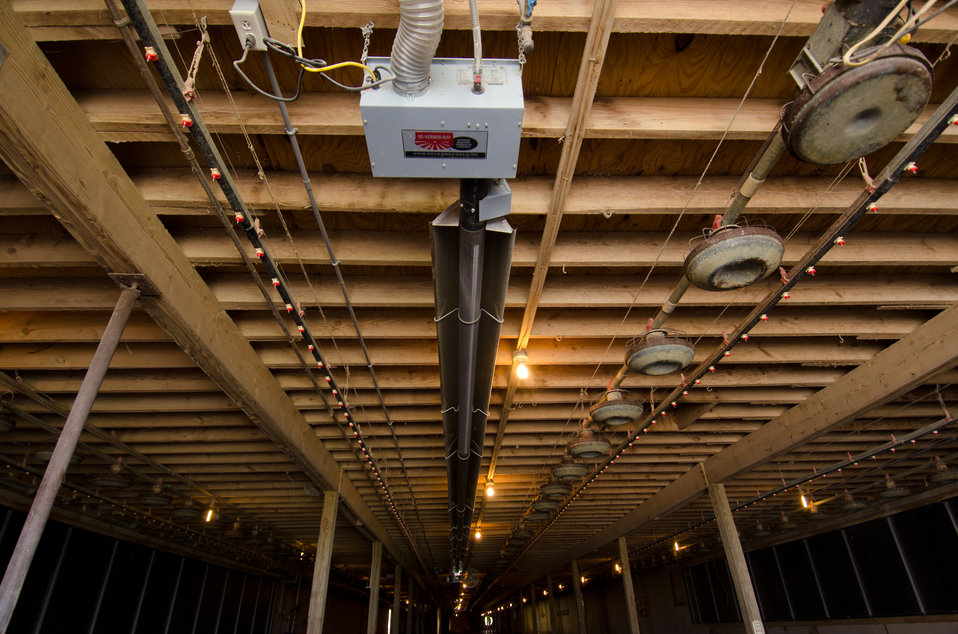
New radiant heaters (center) keep the chickens warm during Pennsylvania winters. Roxanne and Matthew Molnar have an 80,000 chicken farm in Grantville, PA, on, Thursday, April 21, 2011. The Molnar’s were recipients of a $20,000 Rural Energy for America Program (REAP) grant. The money is a portion of the cost to modernize the second of two 40,000 chicken capacity chicken houses Chickens need to be kept at a comfortable temperature to remain productive. New radiant heaters keep the chickens warm during Pennsylvania winters. On warm days, ceiling vents provide passive venting of heat out of the building; when chicken house temperatures are estimated to be above 90 degrees, fans come on, pulling air through water evaporator elements lowering air temperature down 10-15 degrees and flows along the chicken house's length, in effect a tunnel of cooled air. The benefits to the chickens are heat and excess moisture removal; minimized dust and odor; limits buildup of ammonia and carbon dioxide; and provides oxygen for respiration. All these systems are computer controlled allowing owner, Roxanne Molnar to run the farm by herself and raise two small boys Gavin (2) and Grant (5). Husband, Matthew works off the farm and frequently travels, so along with the demands of parenting and manually controlling fans, vents, and having to remove the 80,000 chickens from their feeders and moving them around to cool them was an increasingly daunting task. The computer controls of the new system automate many of the daylong tasks allowing the Molnar’s to run their family farm. USDA Photography by Lance Cheung.